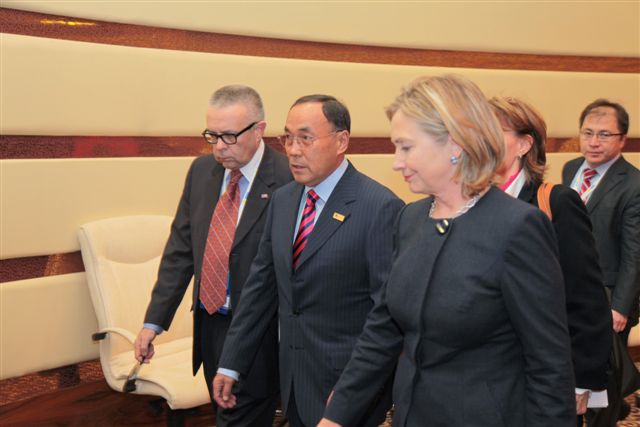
Secretary Clinton Walks With Kazakh Foreign Minister Saudabayev

U.S. Secretary of State Hillary Rodham Clinton walks with Kazakh Foreign Minister Kanat Saudabayev in Astana, Kazakhstan, on December 1, 2010.